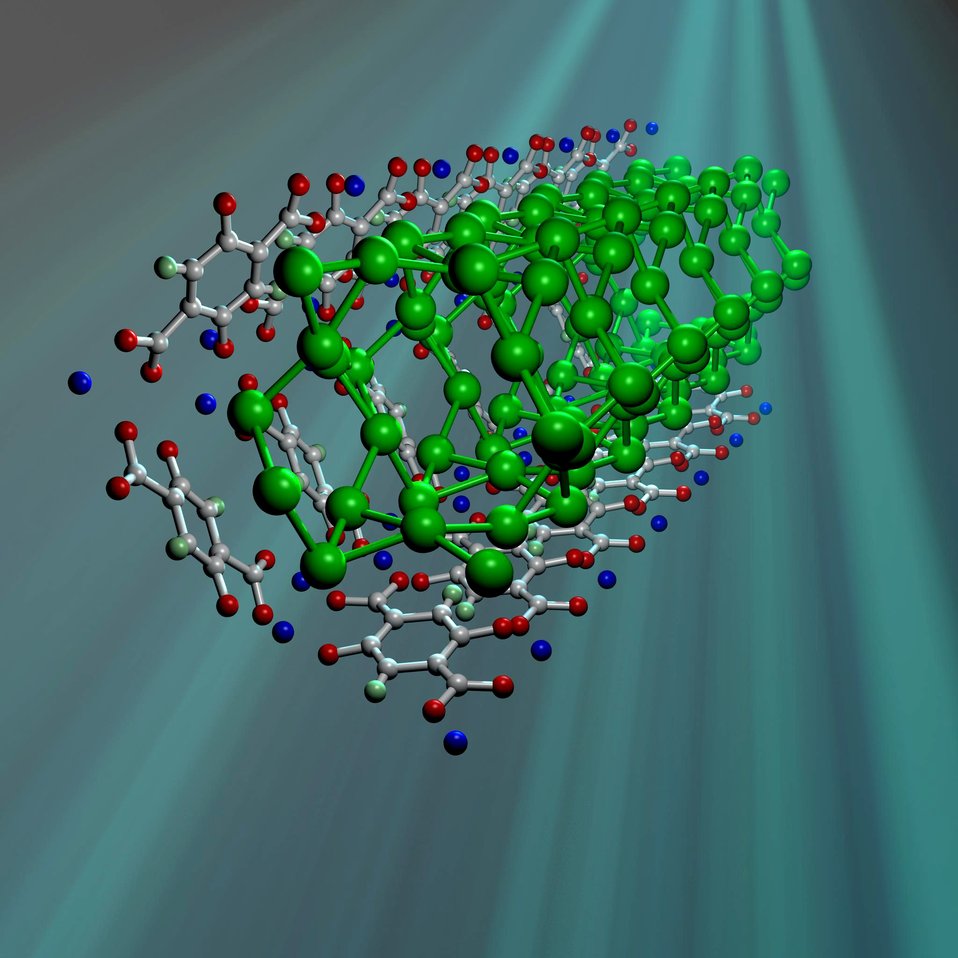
Hydrogen-Storage Compound

MOF-74 resembles a series of tightly packed straws comprised mostly of carbon atoms (white balls) with columns of zinc ions (blue balls) running down the walls. Heavy hydrogen molecules (green balls) adsorbed in MOF-74 pack into the tubes more densely than they would in solid form.